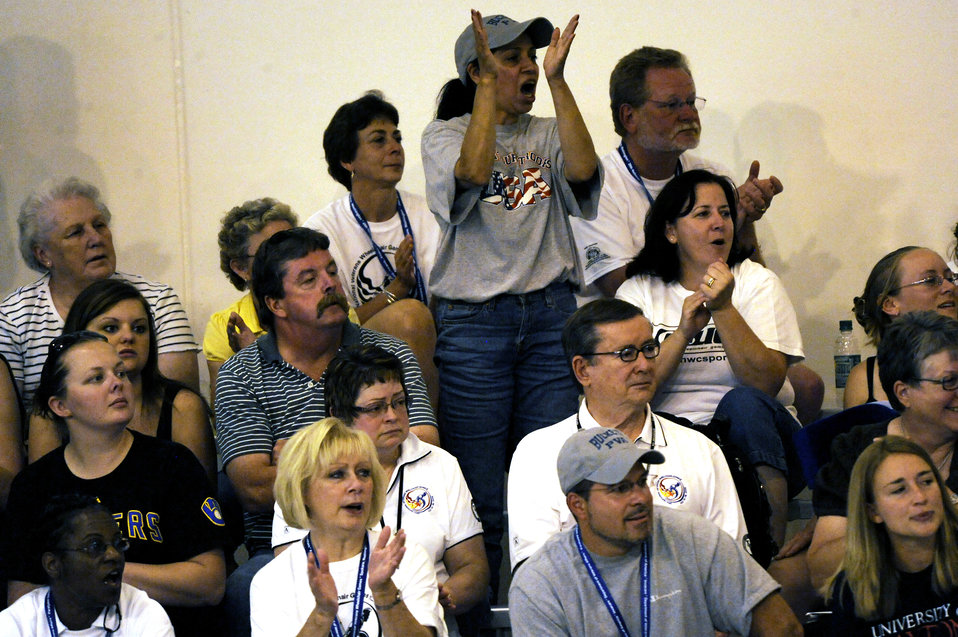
Former Airman competes in veterans Wheelchair Games

Veterans, family members and volunteers cheer inside the Whitworth University swimming pool during the 29th National Veterans Wheelchair Games July 15 in Spokane, Wash. The 29th National Veterans Wheelchair Games runs through July 19.